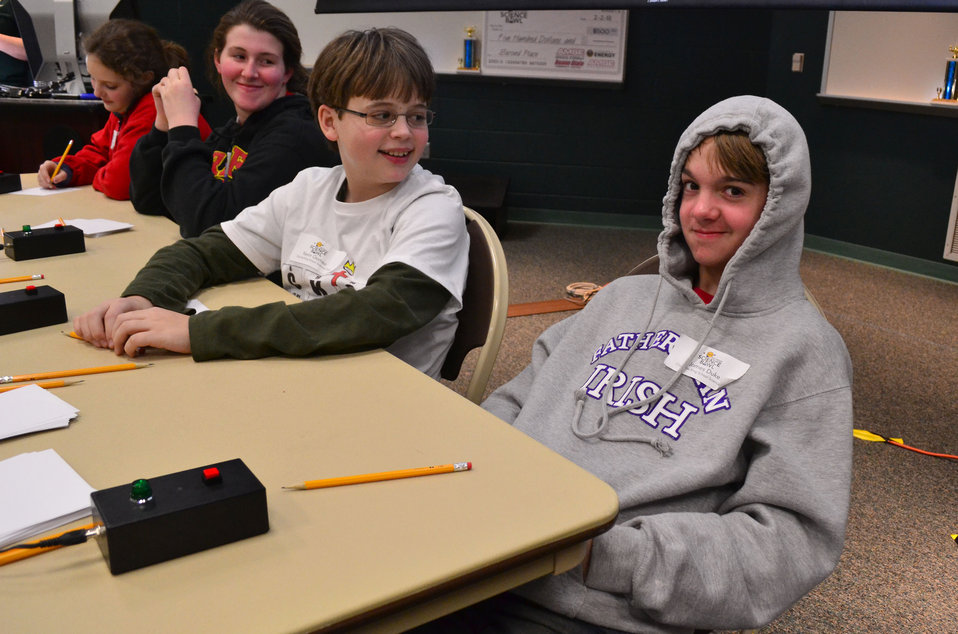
Christ the King School Second Place DOE Tennessee Middle School Science Bowl Oak Ridge

13-008 DOE photo Lynn Freeny DOE Tennessee Middle School Scence Bowl 2-2-2013 Oak Ridge Tennessee